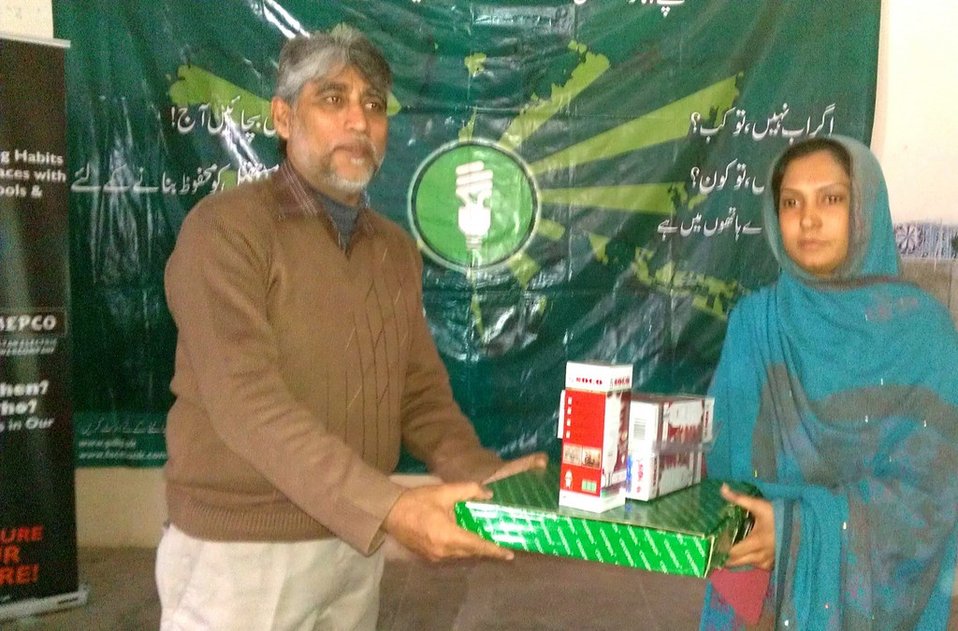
USAID Power Distribution Program-Energy Conservation Seminar at Govt. Comprehensive Girls Higher Secondary School, Multan.

To promote energy saving practices in schools,Khawaja Aurangzaib( Additional Director Procurement, MEPCO), presenting energy savers & Clock to vice principal of Govt. Comprehensive Girls Higher Secondary School,Multan.